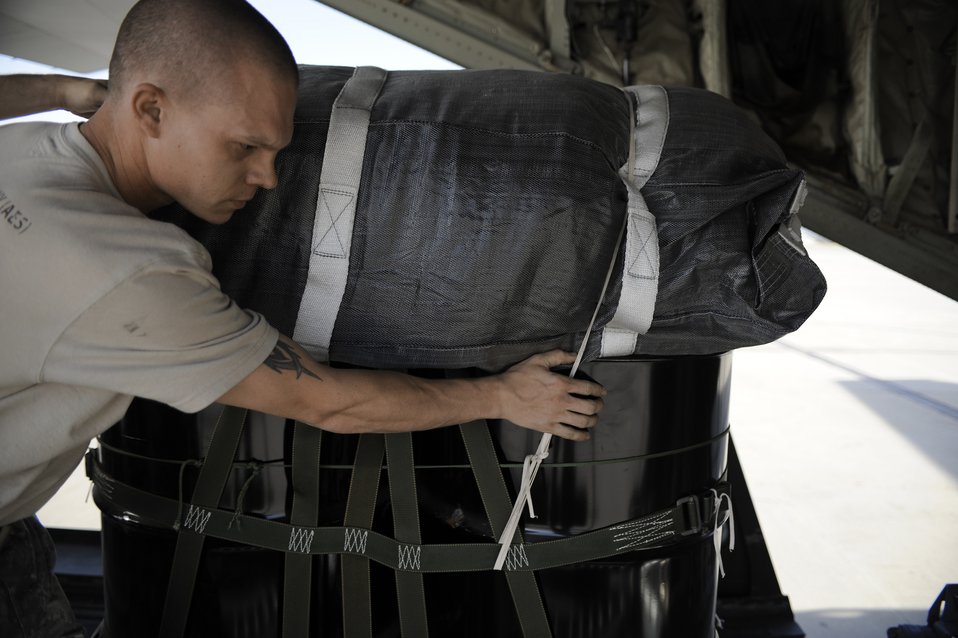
Airdrop fuels austere Afghan locations

Army Sgt. Joseph Brack guides a pallet into the cargo bay of a C-130J Super Hercules, in preparation for a night airdrop to deliver JP-8 fuel to troops on the ground July 17 over southwestern Afghanistan. Sergeant Brack is assigned to the 612th Quartermaster Company.